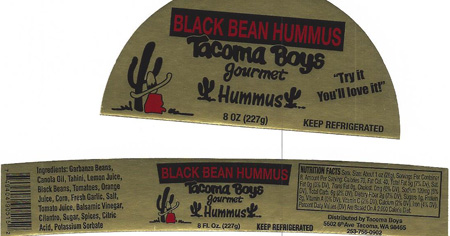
RECALLED – Hummus

July 16, 2013 – Product Recall – Hagee Foods Inc. dba Penny's Salsa Inc. Recalls Hummus Products Because of Possible Health Risk.